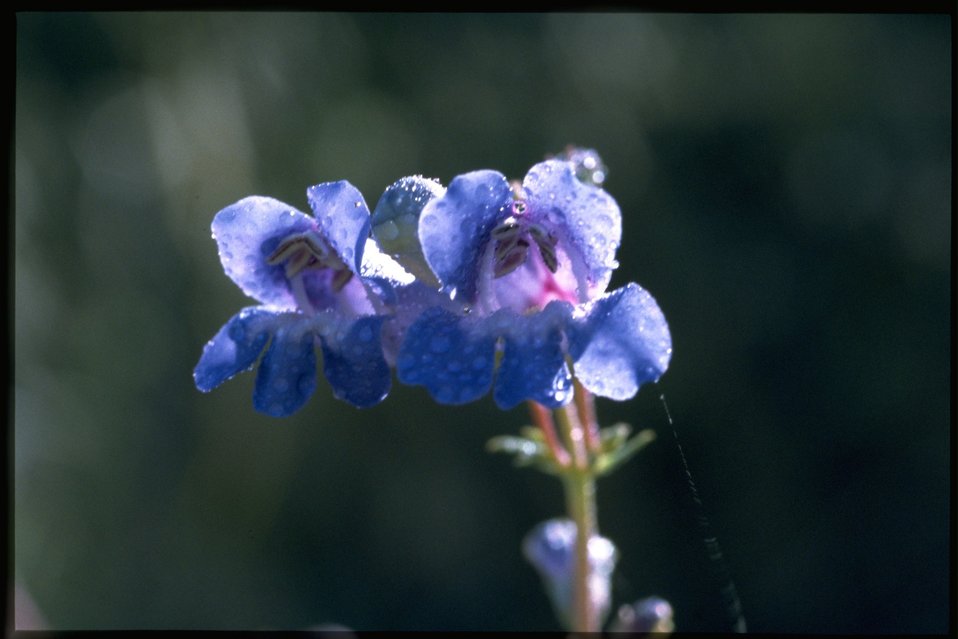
Closeup shot of Penstemon.